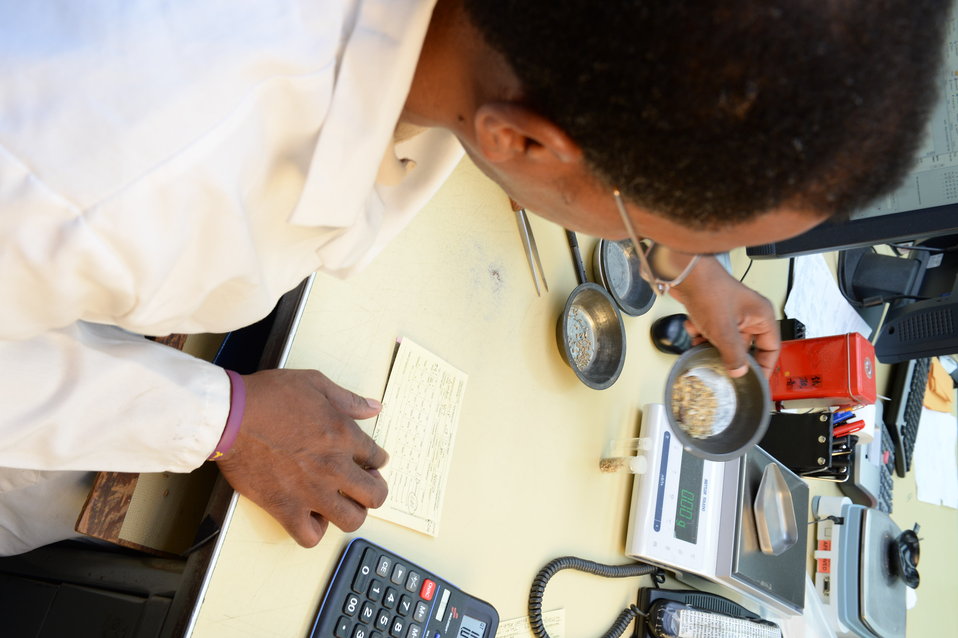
A U.S. Department of Agriculture (USDA) Grain Inspection, Packers and Stockyards Administration (GIPSA) Federal Grain Inspection Service (FGIS) scientist tests wheat at the FGIS inspection laboratory in New Orleans, LA on Monday, Nov. 18, 2013.